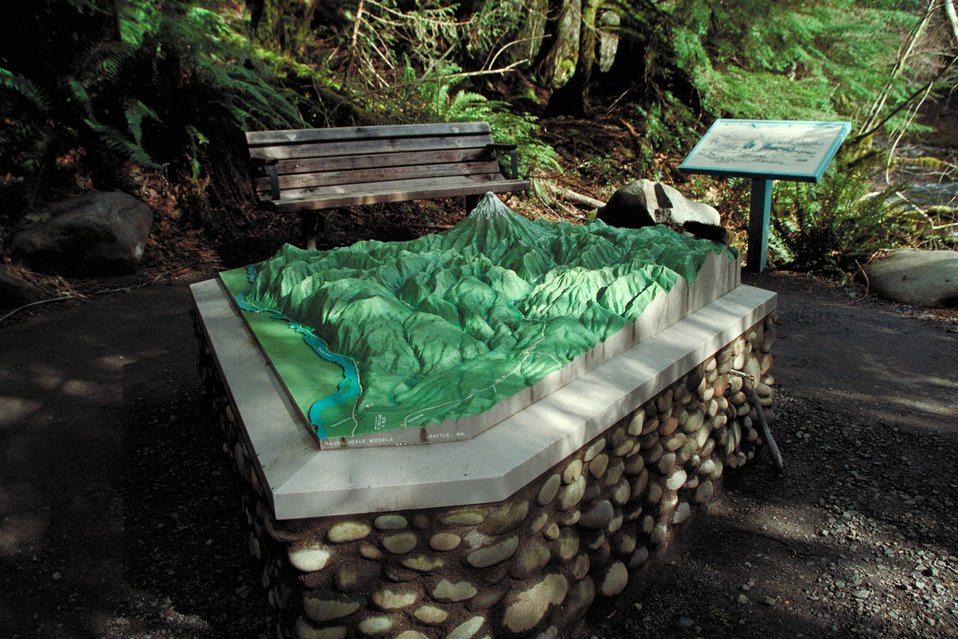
Cascade Stream Watch is an environmental education program conducted at BLM's Wildwood Recreation site.